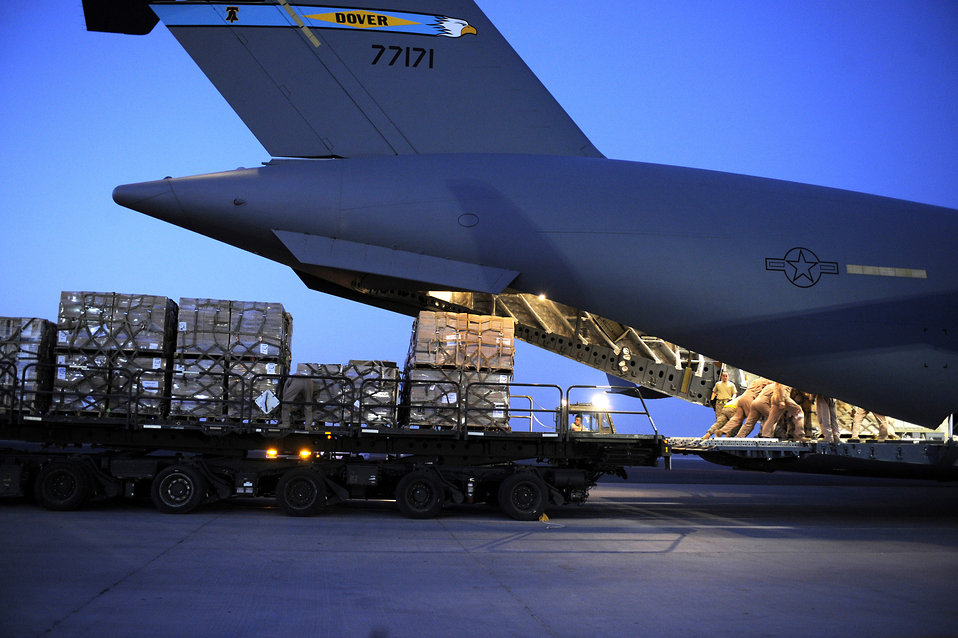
U.S. airlift aids Pakistan's war-torn Swat Valley

Airmen load a pallet containing humanitarian relief supplies destined for Pakistan into the cargo bay of a C-17 Globemaster III May 20 at an undisclosed location in Southwest Asia.